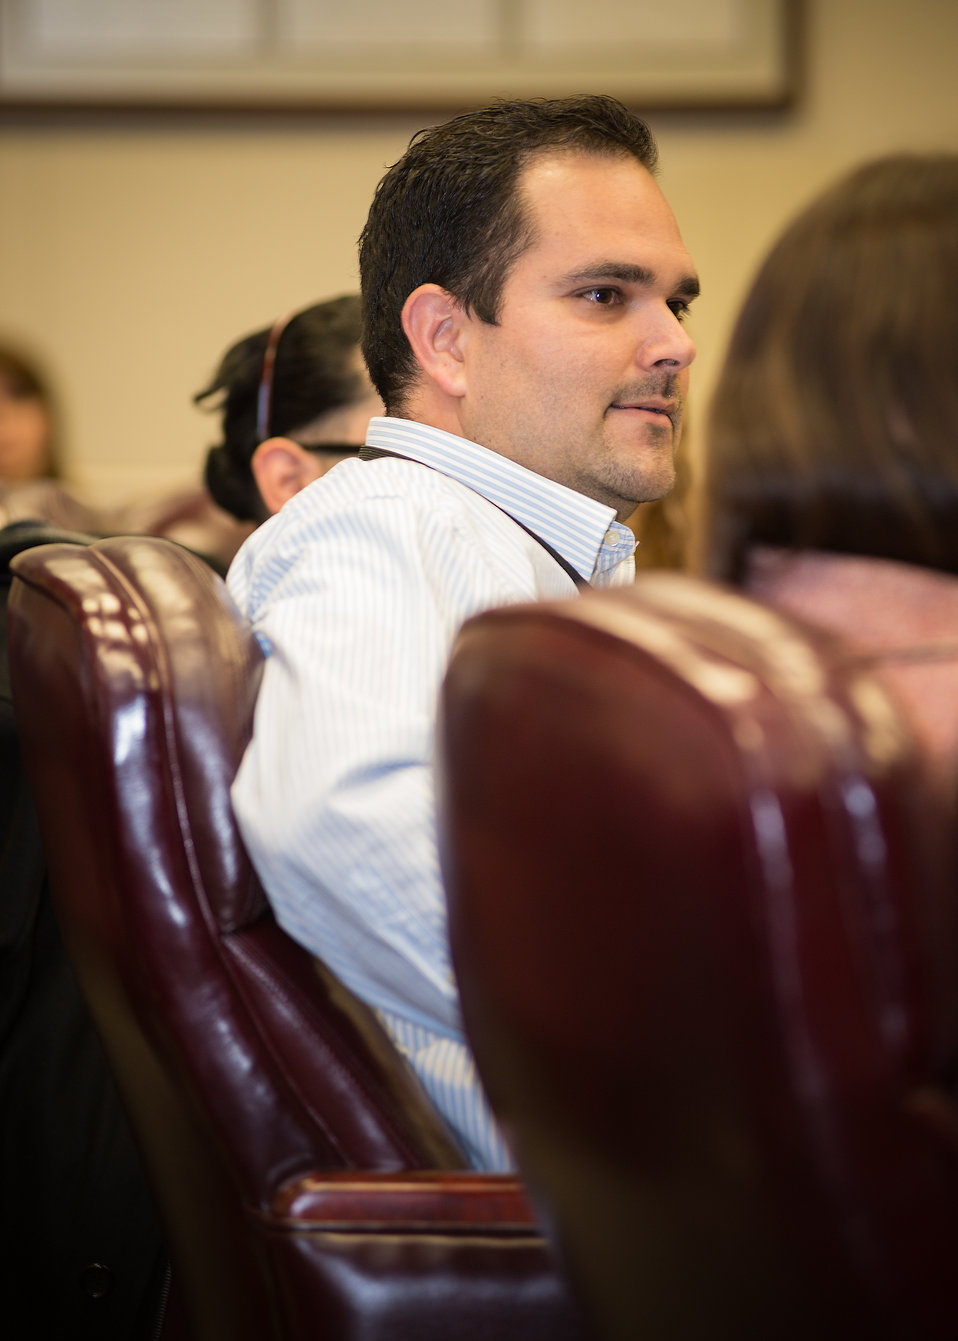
Waldemar Pereira asks a question of Agriculture Deputy Secretary Krysta Harden at the meeting of the Hispanic Association of Colleges and Universities (HACU) National Internship Program Fall 2014 Interns during the Pathways Programs for Students and Recent Graduates to Federal Careers program at the U.S. Department of Agriculture (USDA) on Tuesday, Dec. 3, 2013 in Washington, D.C.